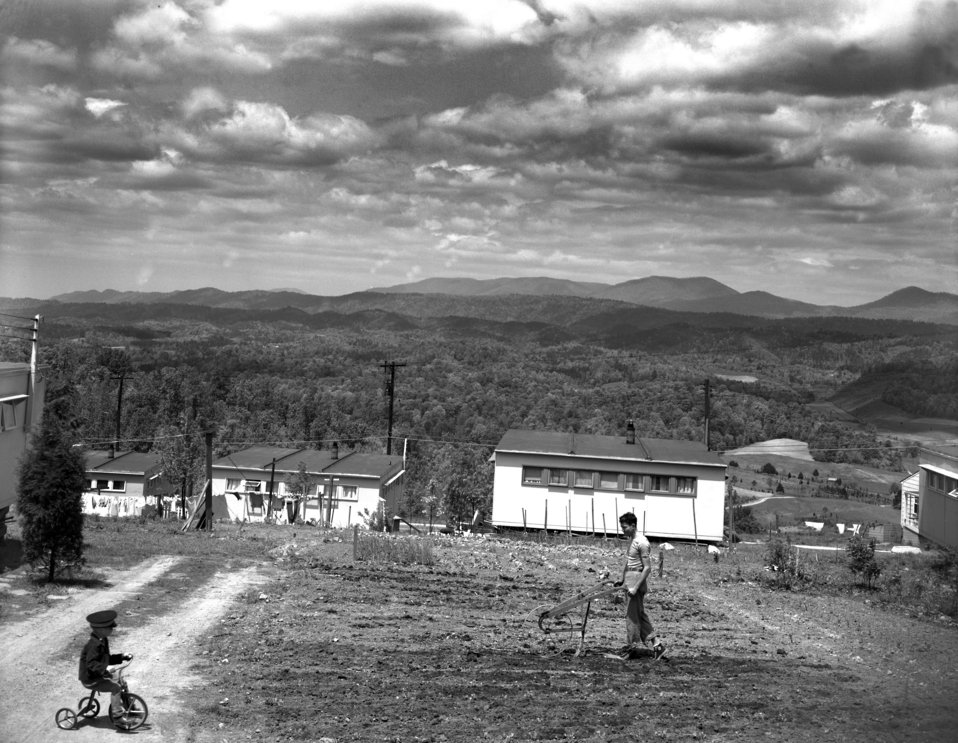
Oak Ridge Housing West Outer Drive 1948

5318 DOE photo Ed Westcott 1948 Oak Ridge Tennessee